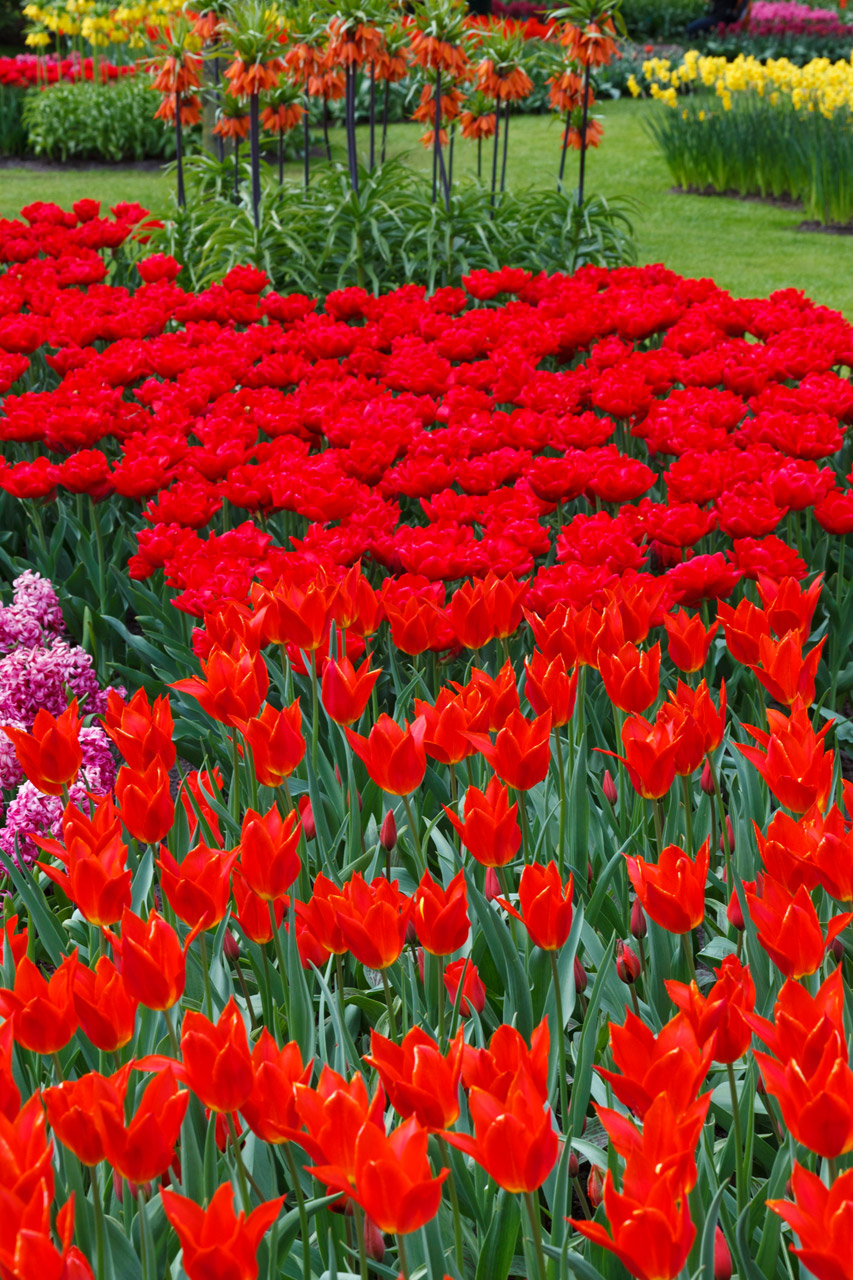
Vivid red tulips

Colorful flower beds with deep vidid red tulips in keukenhof gardens.